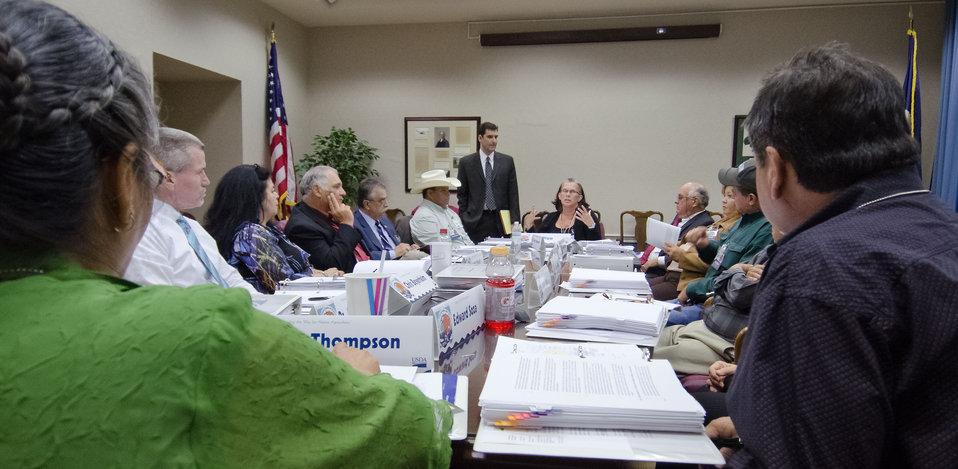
U.S. Department of Agriculture (USDA) Senior Advisor to the Secretary for Tribal Relations Janie Simms Hipp of the Chickasaw Nation, adds a comment in support of USDA Office of General Council for Civil Rights Rick Gibson (standing), the lead attorney for the Keepseagle Settlement, during his briefing to the USDA Council for Native American Farming and Ranching (CNAFR) representatives meeting on Monday, Aug. 13, 2012 at the USDA headquarters Whitten Building, in Washington, D.C. CNAFR was created to advise the Secretary on ways to eliminate barriers to participation for Native American Farmers and Ranchers in USDA programs. The Council was established as part of the Keepseagle settlement, and is conducted under the oversight of USDA's Office of Tribal Relations, which is part of the Office of the Secretary of Agriculture. The Director of Tribal Relations Joanna Mounce Stancil serves as Designated Federal Official (DFO) for the Council.